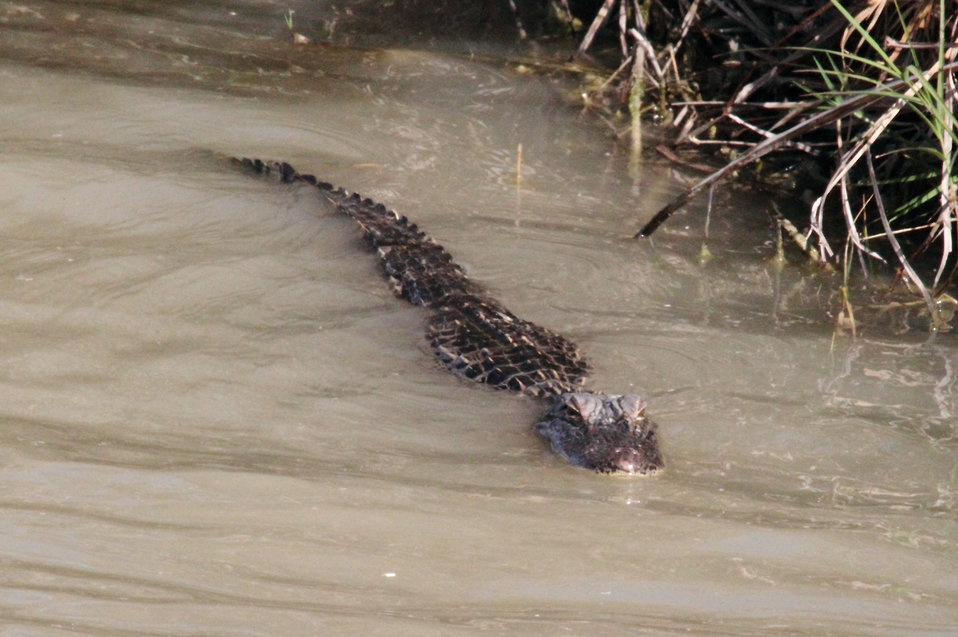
American alligator in the water

American alligator partially emerged the water